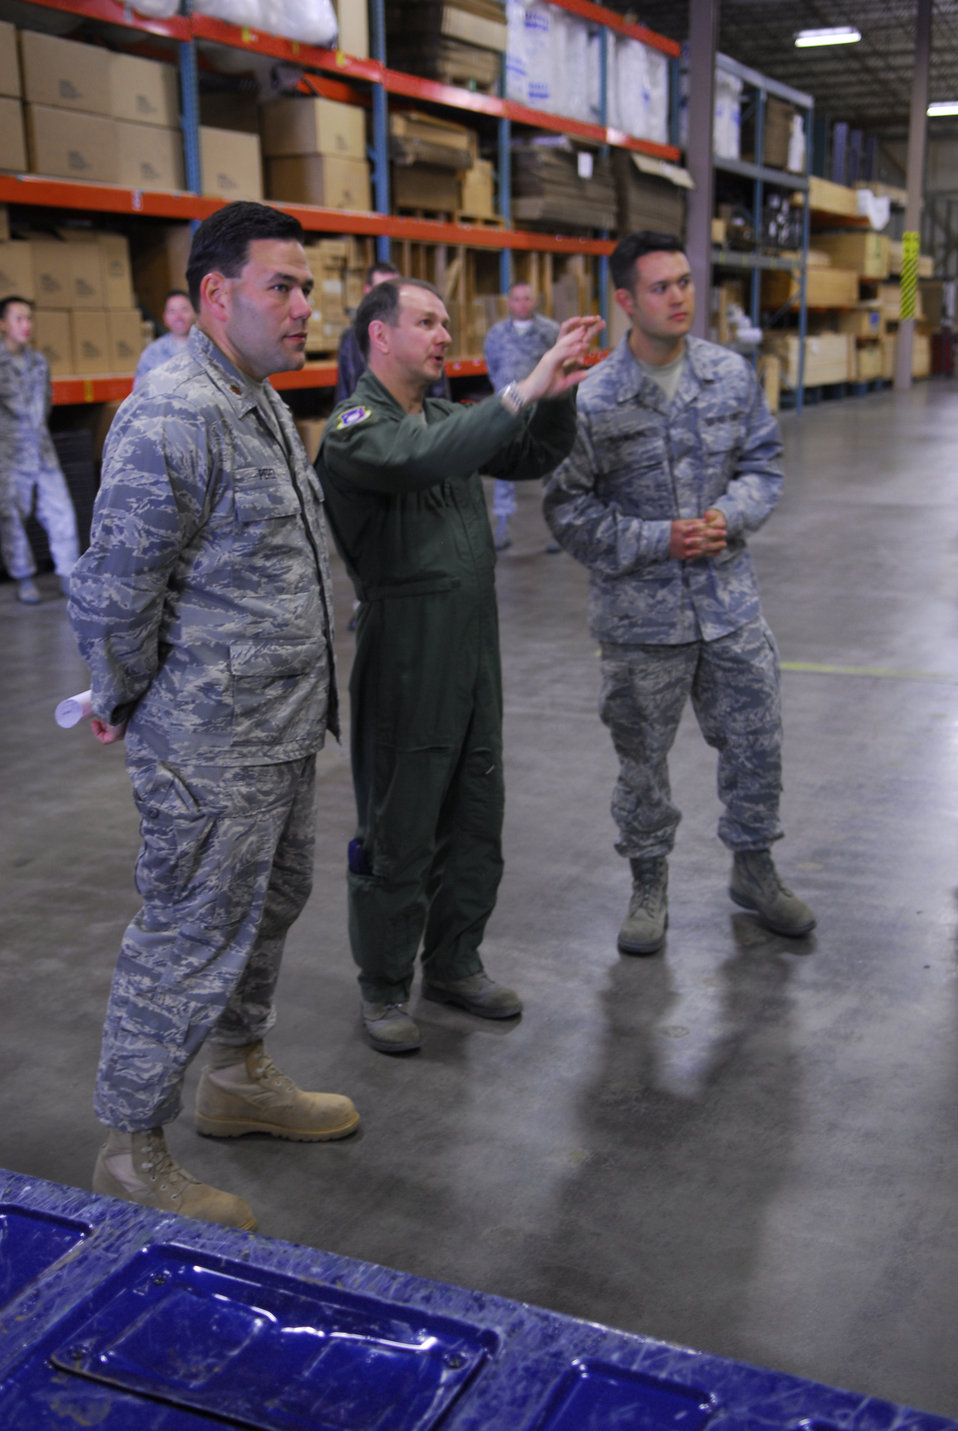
AFSO 21 improves cargo process more efficiently

Col. Steven Winters (center), the 30th Space Wing vice commander at Vandenberg Air Force Base, Calif., along with Maj. Manuel Perez (left), the 30th Logistics Readiness Squadron commander, and Tech. Sgt. Forrest Chambers, the 30th LRS surface cargo noncommissioned officer in charge, discuss the changes April 9 to be made to the cargo area of Building 5500. With the help of the Vandenberg's Air Force Smart Operations for the 21st Century team of experts, the 30th LRS will receive a month-long makeover to increase the overall efficiency of the cargo area.